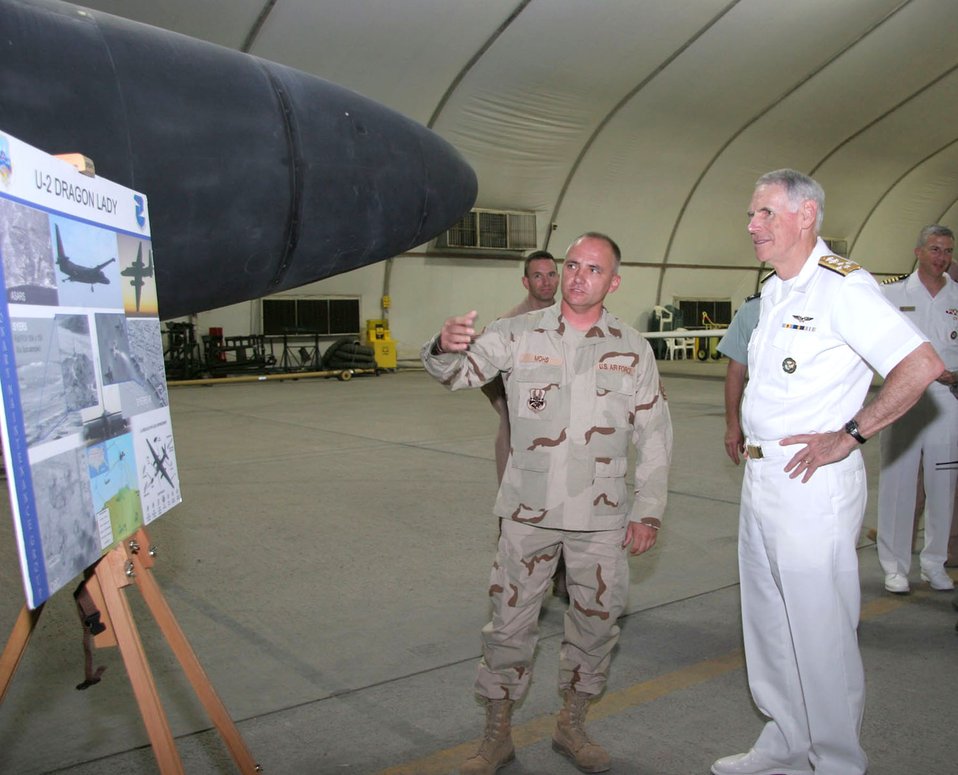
Admiral Fallon visits 380th AEW Airmen

Master Sgt. Todd Mohs briefs Adm. William J. Fallon and his staff on the capabilities of the U-2 aircraft and its mission Sept. 17 during the general's visit to the 380th Air Expeditionary Wing in Southwest Asia. Admiral Fallon is the U.S. Central Command commander and Sergeant Mohs is a crew chief with the 380th Expeditionary Aircraft Maintenance Squadron.